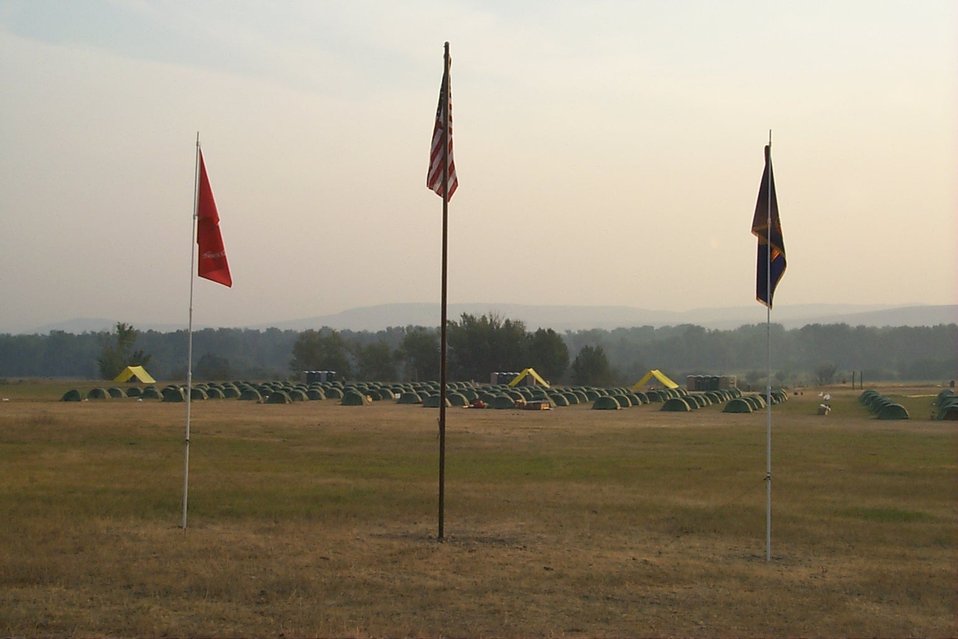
Camp Fire Clearwater Fire Salmon Field Office USRD Upper Snake River District